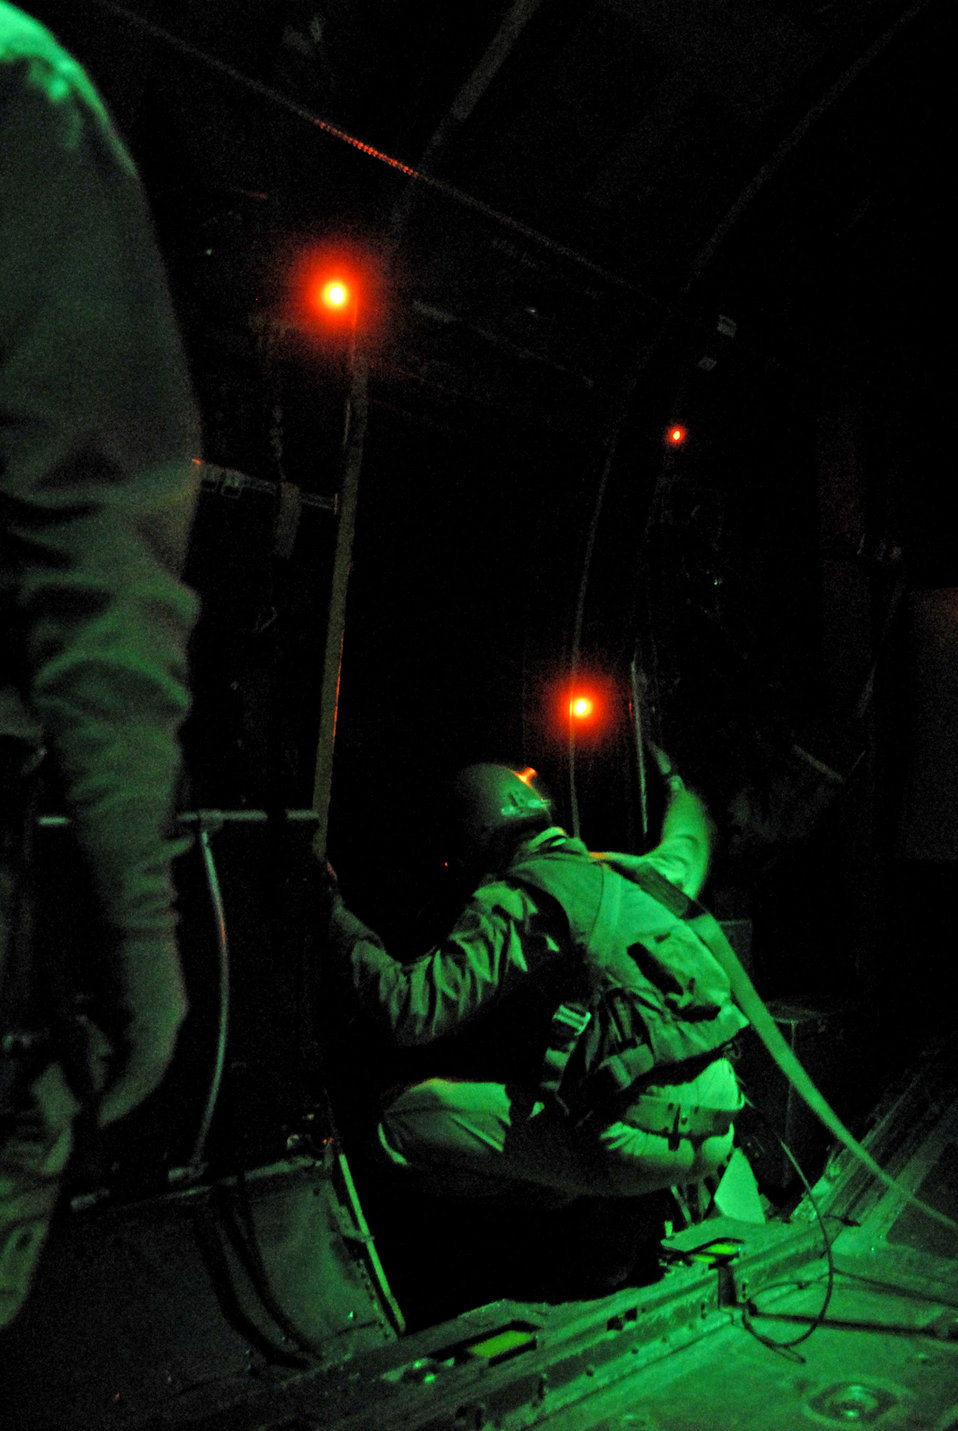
Airmen airdrop messages to Iraqi citizens

Staff Sgt. Gabriel Molanders gazes at the cities below following the airdrop of several hundred thousand leaflets from a C-130 Hercules over an Iraqi city recently. Sergeant Molanders is a C-130 loadmaster with the 737th Expeditionary Airlift Squadron and deployed from Dyess Air Force Base, Texas.